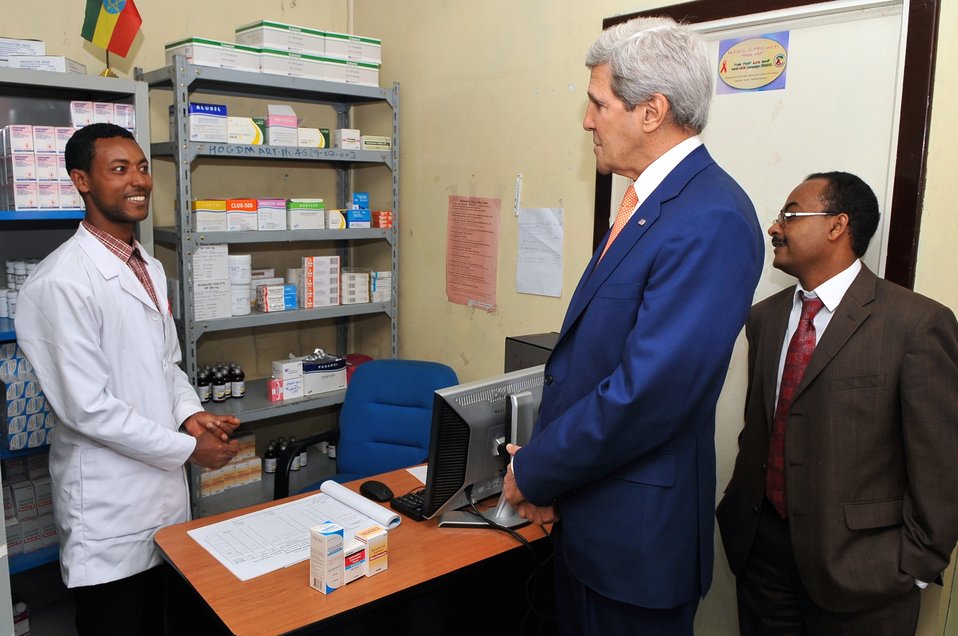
Secretary Kerry Visits PEPFAR-Supported HIV Clinic in Ethiopia

A pharmacist gives U.S. Secretary of State John Kerry a rundown of his supplies during a tour of a PEPFAR-supported HIV clinic in Addis Ababa, Ethiopia, on May 1, 2014.